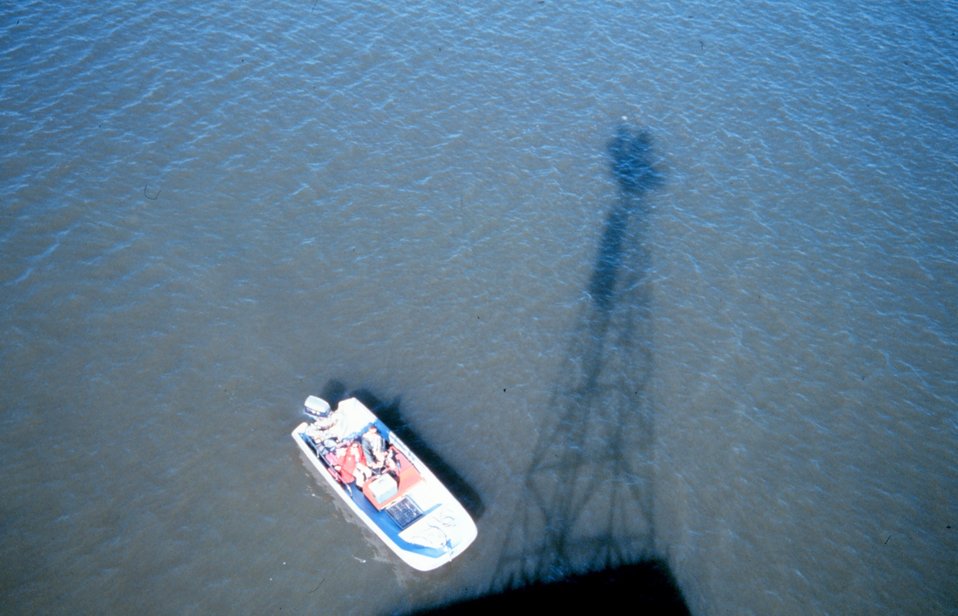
Taken from the top of a navigational aid near Sabine Pass, Texas. Changing Mini-ranger die hard batteries.